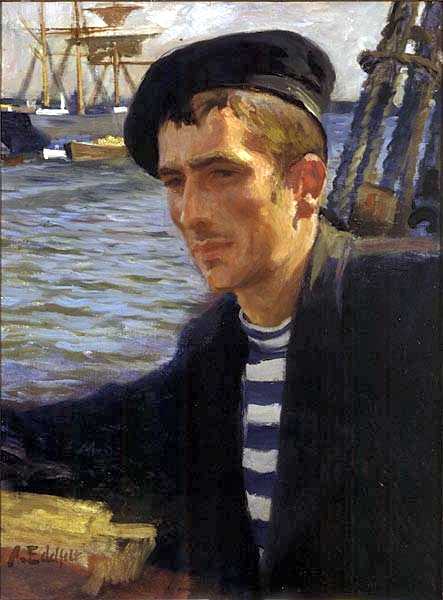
Albert Edelfelt - Uusmaalainen merimies